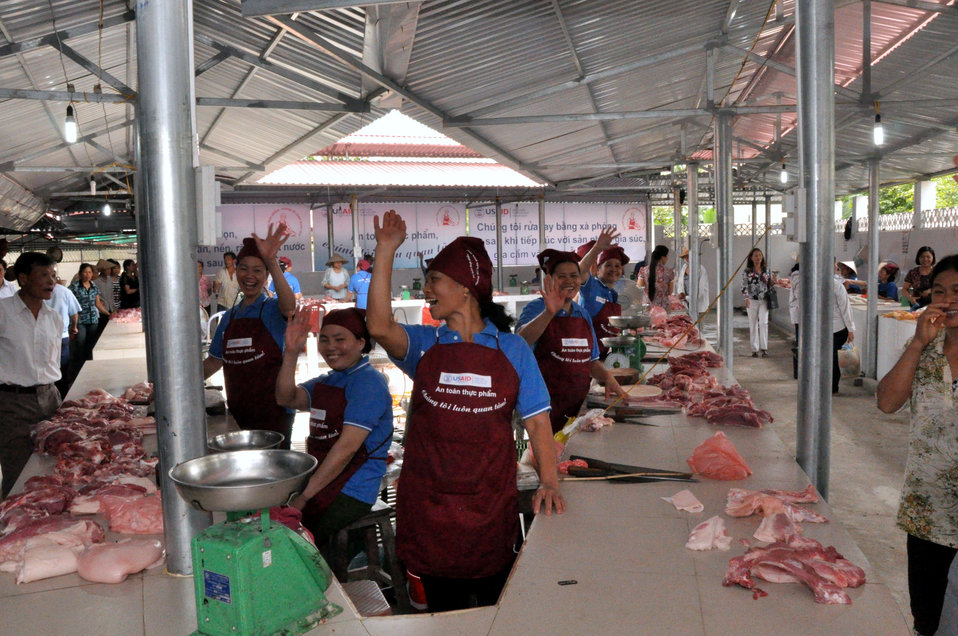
Handover Ceremony Hoa Mac Market Ha Nam

October 26, 2012